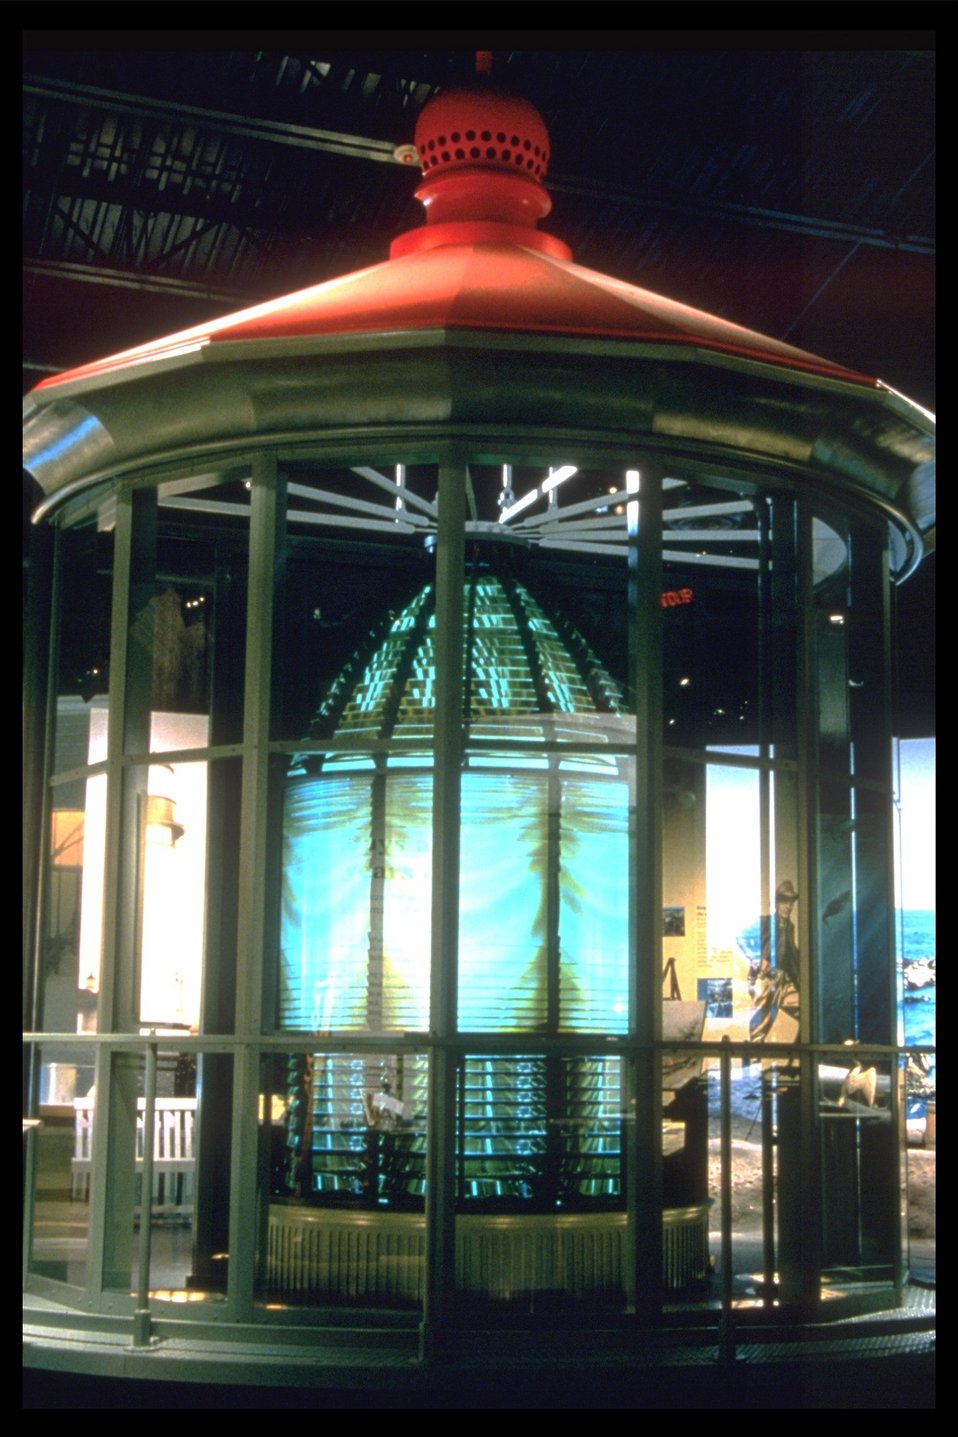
Interpretive center exhibit hall, fresnel lens display.